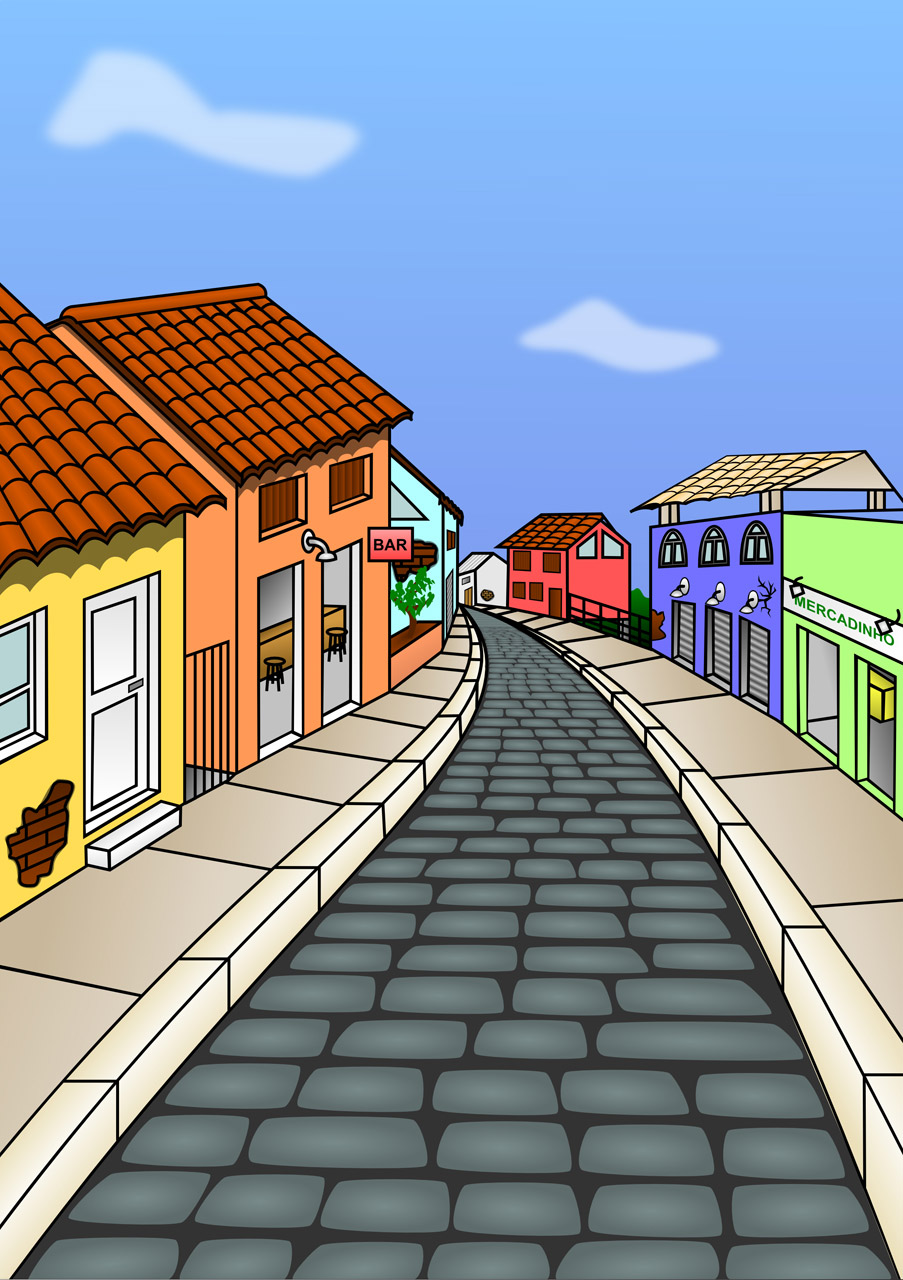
Village

I have created this image, from scratch, using inkscape.